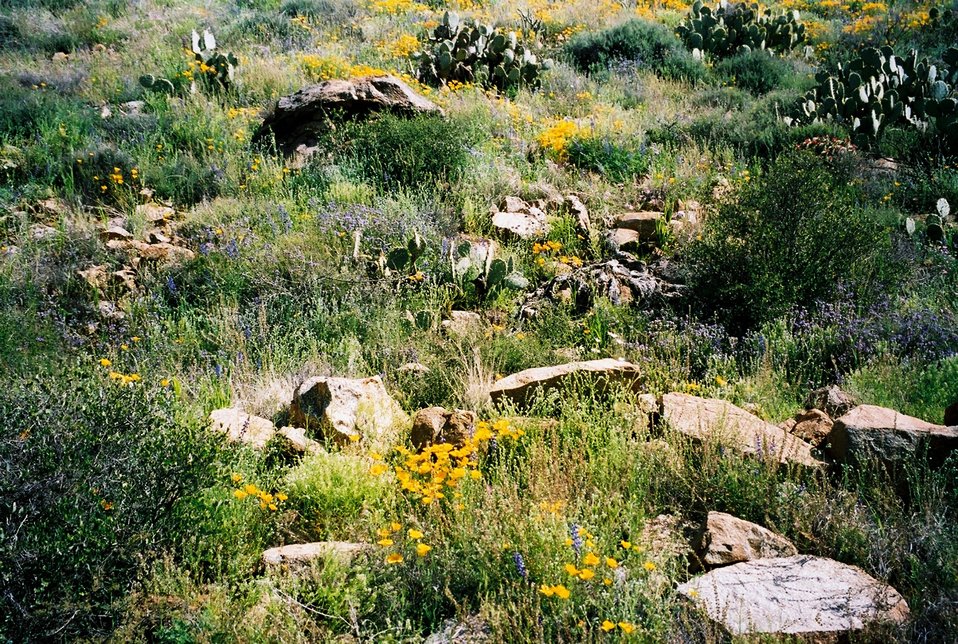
Cacti and Wildflowers grow in the Agua Fria National Monument.